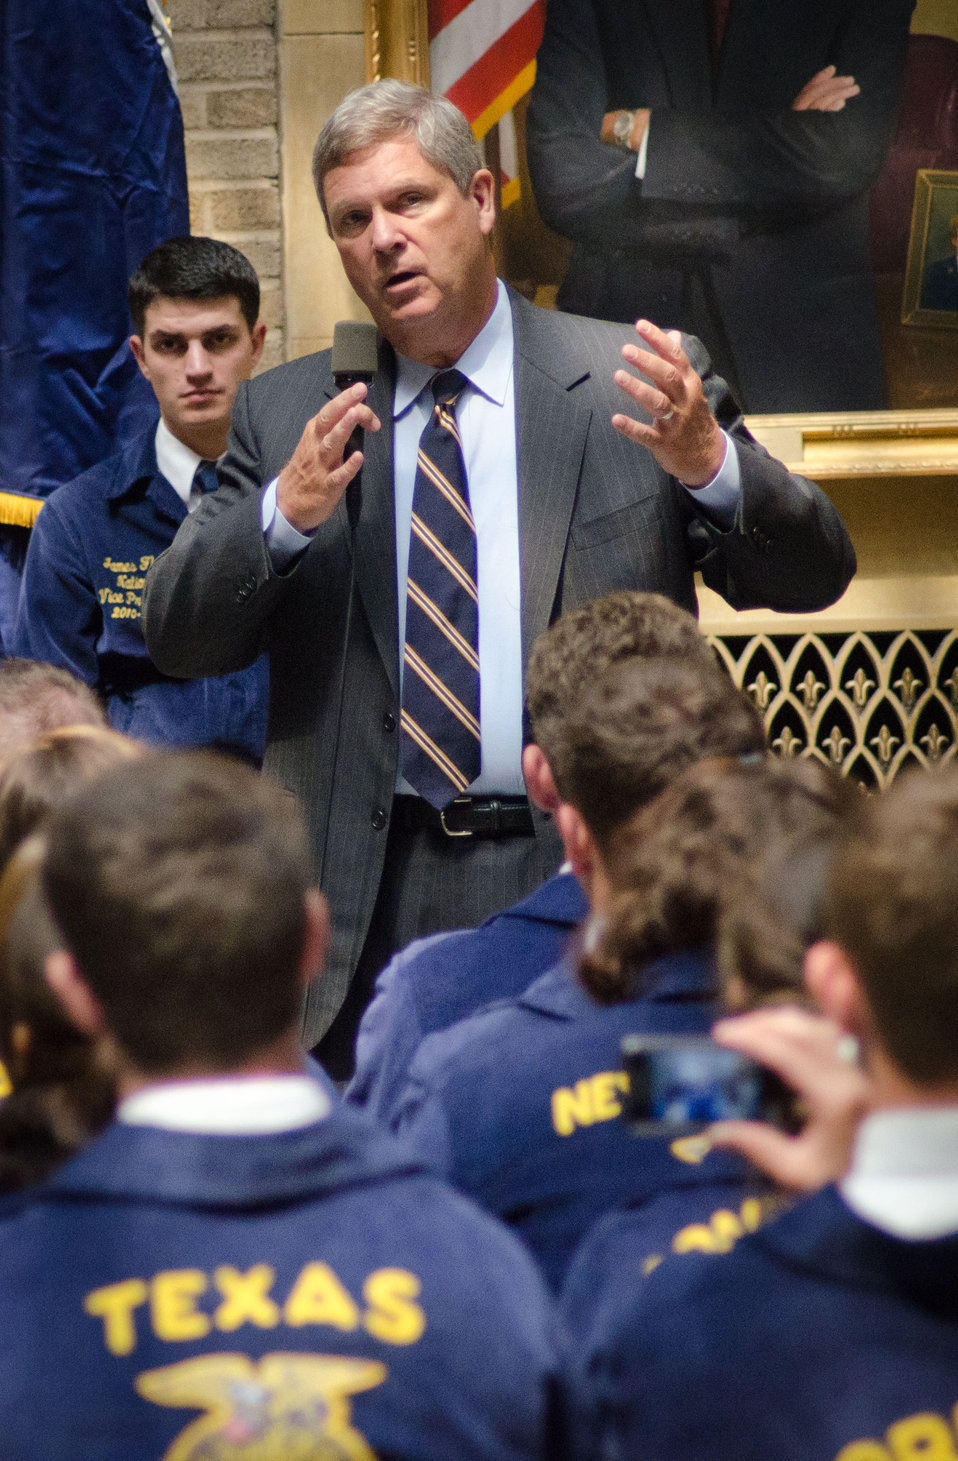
Agriculture Secretary Tom Vilsack answers questions from the National Future Farmers of America (FFA) leadership about debt limits, farm loans, importance of the Farm Bill and other questions while at the U.S. Department of Agriculture in Washington, DC, on Thursday, July 28, 2011.